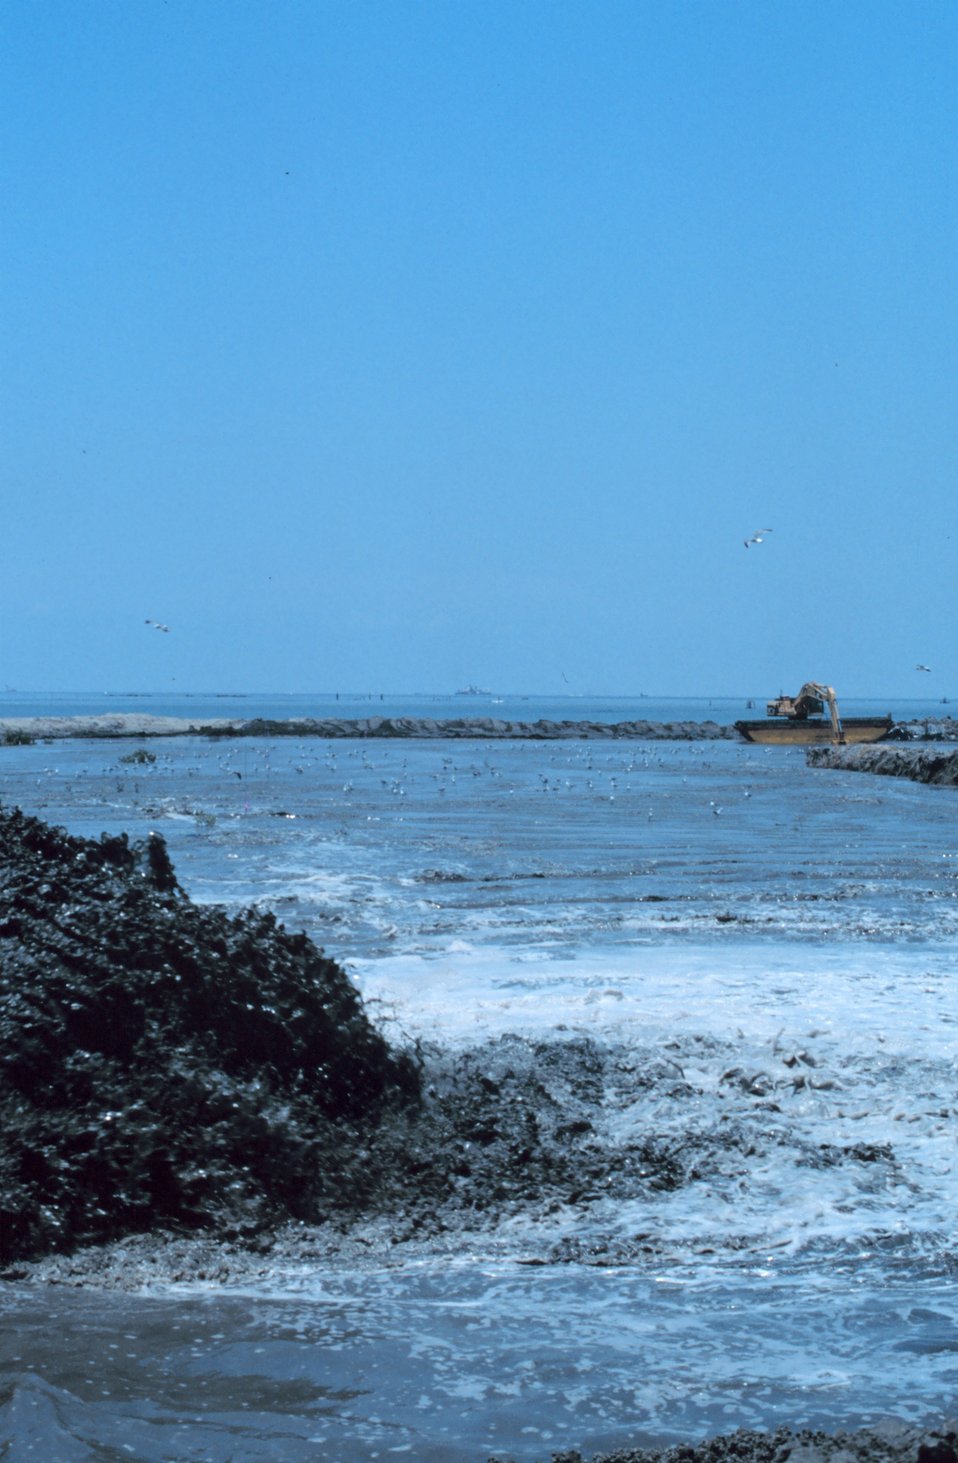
Sediment spews onto the marsh platform, the containment dike is clearly seen in the background.